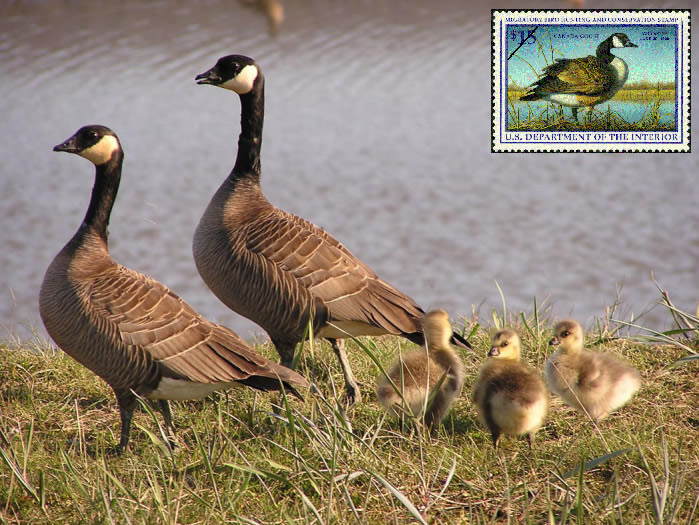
Canada Geese (Branta canadensis)

A Canada Goose was depicted on the 1997 Duck Stamp (inset, top right). Will a similar one be portrayed on the 80th stamp? Come be part of the excitement at the 2012 Federal Duck Stamp Art Contest held at Weber State University, Ogden, Utah on September 28-29.

Canada Geese (Branta canadensis): It is considered the big game of North American waterfowl. Although there are variations of size and color among the different subspecies, the tell tale hallmark is the black stocking neck and head and the prominent white cheek patch. All Canada geese are wily, cunning, alert, and strong. The grandest of all Canada geese is the common Canada goose. It is a huge fellow with a wing span as much as 5 feet and can weigh up to 13 pounds. It is affectionately known as a “honker” in reference to its stirring bugle like call that comes down from the high-flying “V” formations during migration. Except for the laugh of the loon on northern lakes no other sound signals the spirit of wilderness. The common Canada goose appears in most states at some season of the year. They breed from Alaska and Canada all the way down to southern states of North America. For all its wariness, they are easily domesticated to the point of becoming year round residents. As long as food and water remain available, geese will make a place home.